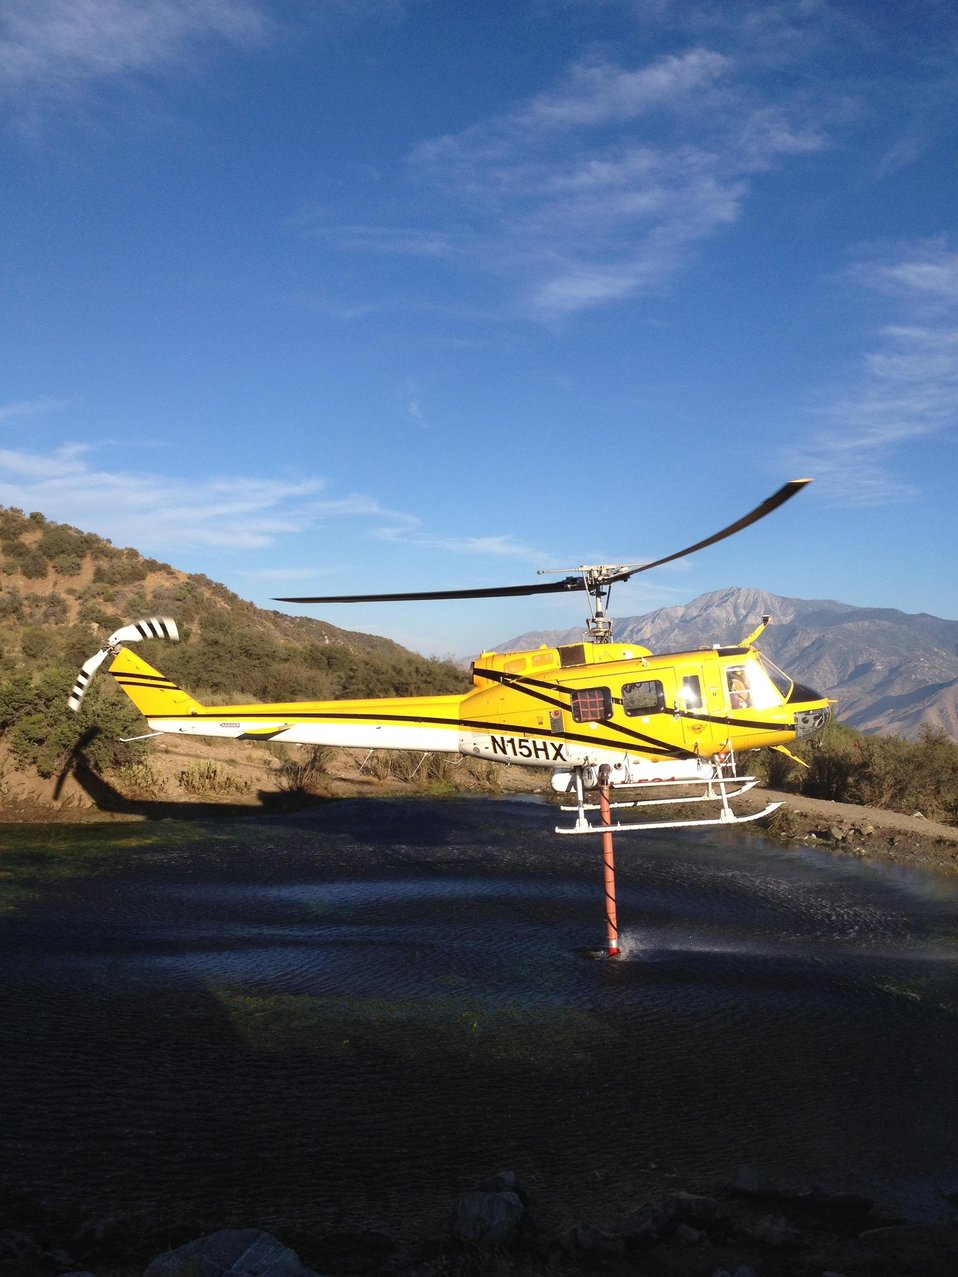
A helicopter fills up with water for use on the Hathaway Fire. The Hathaway Fire is east of Hathaway Canyon on the northern portion of the Morongo Indian Reservation in the San Gorgonio Wilderness near Palm Springs, CA began on started Jun. 9, 2013 and the cause is still to be determined. The fire has burned approximately 3, 825 acres and is 95% contained as of Jun. 25, 2013.